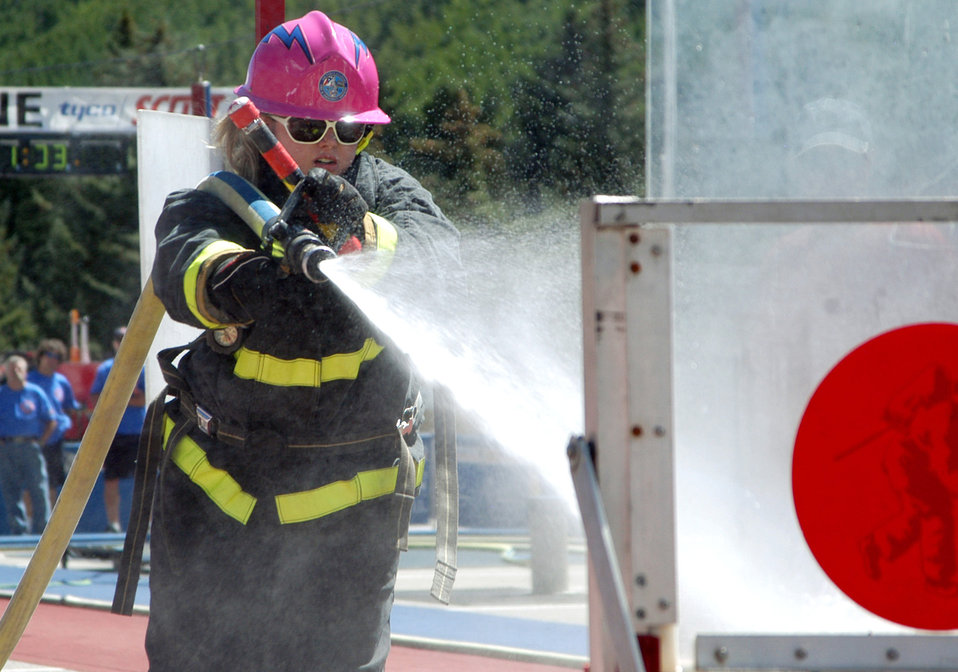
Academy firefighters win DOD awards

Senior Airman Jessica Morehouse competes as part of the Fire Fembots team at the Regional Firefighter Combat Challenge Aug. 29, 2010 in Vail, Colo. Airman Morehouse was named the Department of Defense's military firefighter of the year during the Fire and Emergency Services Annual Awards Banquet Aug. 27, 2010.